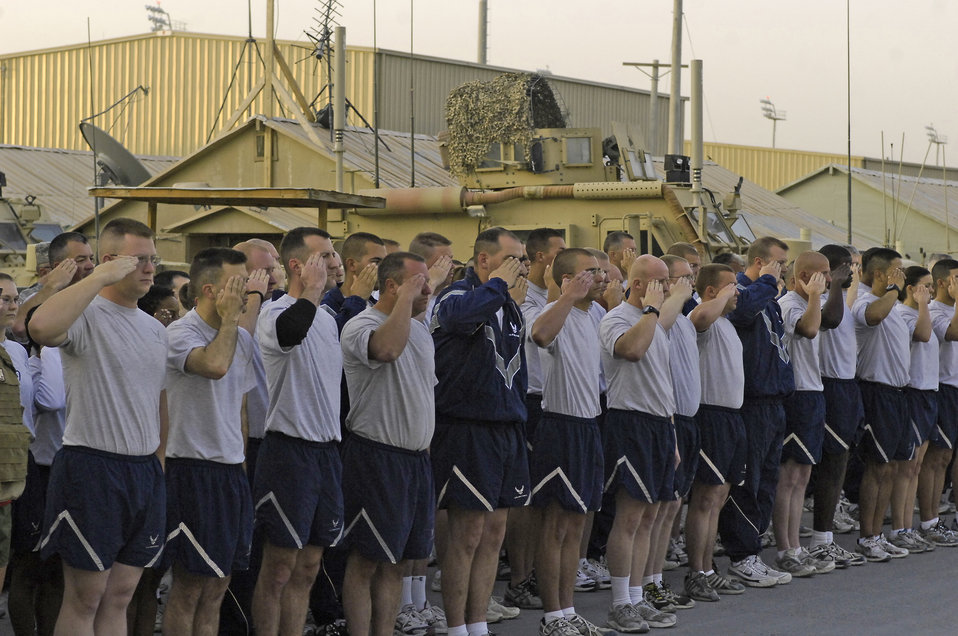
Warfighters take time for Air Force's 62nd birthday

Several hundred Airmen salute as the U.S. flag is raised on the 62nd Air Force birthday Sept. 18, 2009, at Camp Cunningham, Afghanistan. The Airmen ran a 5 kilometer run afterward to show their strength and determination to continue taking the fight to the enemy every day.